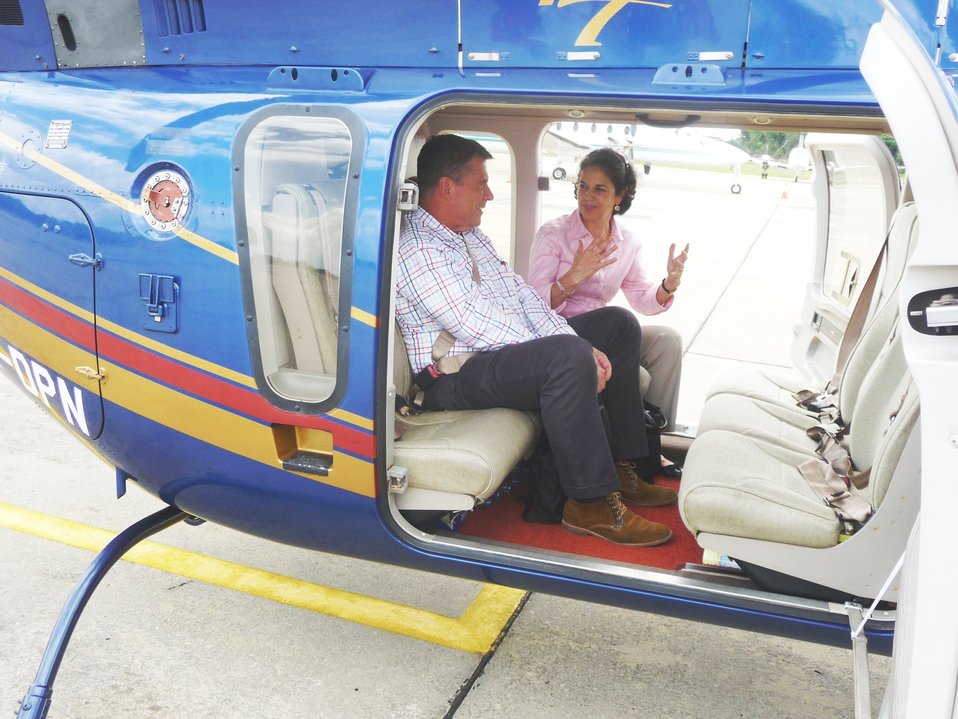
Under Secretary Otero in Indonesia

Under Secretary for Democracy and Global Affairs Maria Otero speaks with a local inhabitant in Pekanbaru, Indonesia, May 19, 2010.